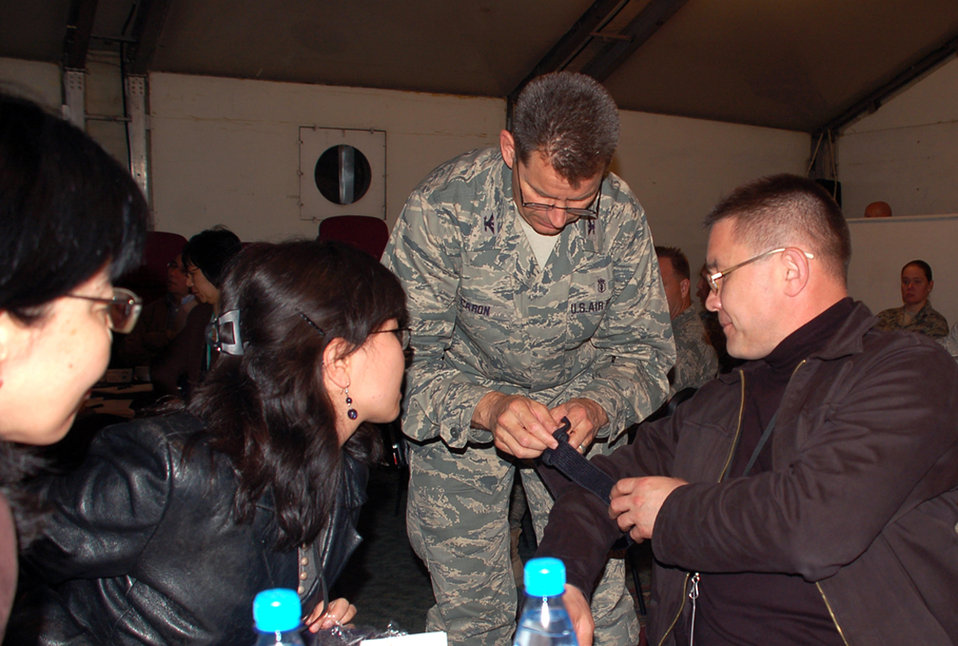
Med group holds symposium

Col. (Dr.) Gerard Caron demonstrates the ease of a self-administering tourniquet during the 376th Expeditionary Medical Group's Coalition Medical Symposium held recently at Manas Air Base, Kyrgyzstan. Guests attending the symposium were from the Spanish coalition medical staff, U.S. Embassy medical unit, Peace Corps medical staff and the Bishkek Research Center of Trauma and Orthopedics. Colonel Caron is the 376th EMDG commander and is deployed from Randolph Air Force Base, Texas.